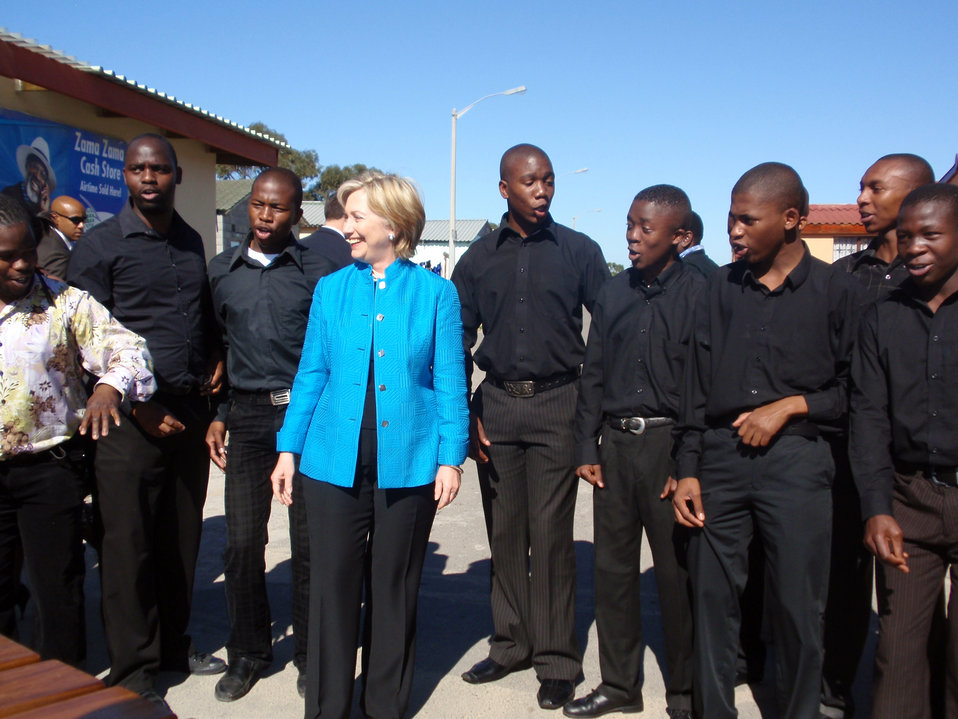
Secretary Clinton Visits Victoria Mxenge Housing Development

U.S. Secretary of State Hillary Rodham Clinton poses with a dance group after their performance during her visit to the Victoria Mxenge Housing Development in Cape Town, South Africa August 8, 2009.